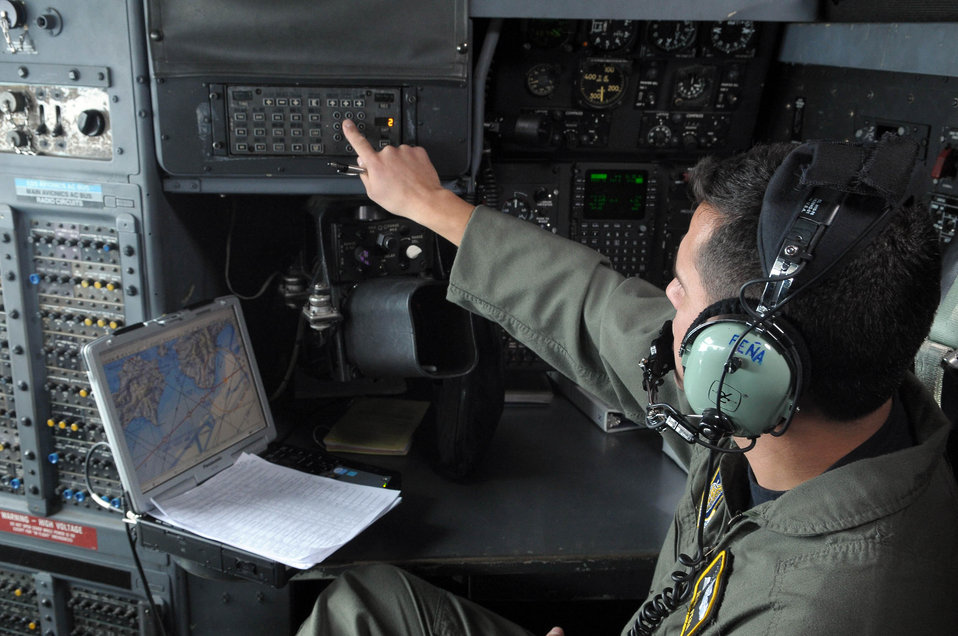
Yokota Airmen participate in large-force exercise

Capt. Aron Pena enters data inflight as part of a bilateral training mission Feb. 23, 2010, at Kadena Air Base. Japan. Captain Pena is a navigator with the 36th Airlift Squadron.